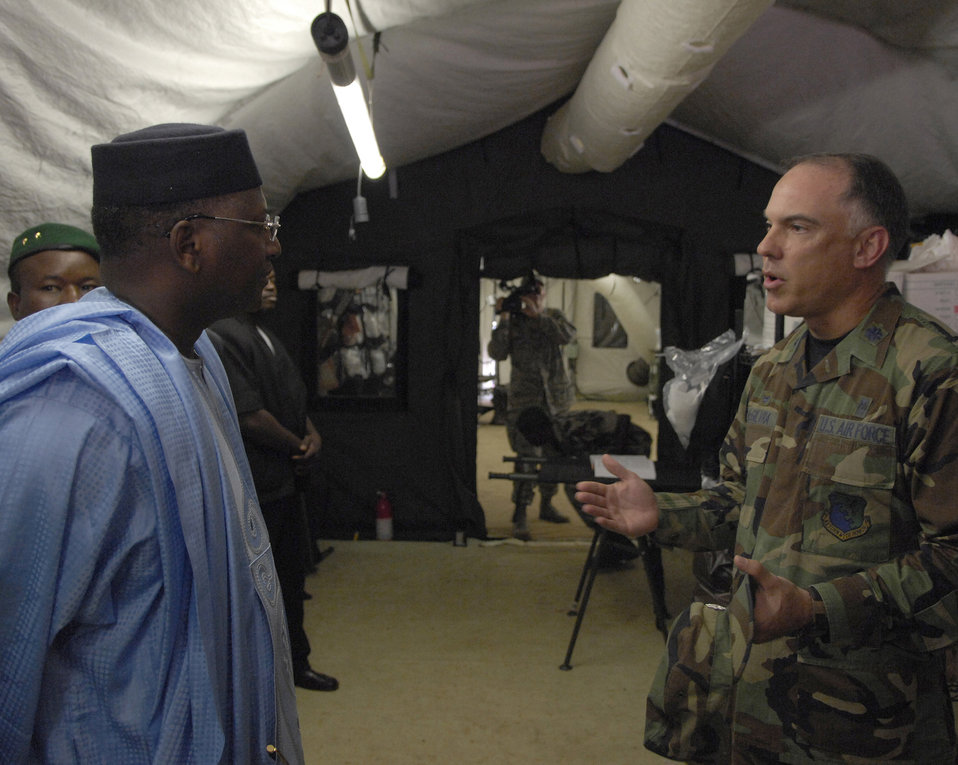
American and African medical personnel train together

Lt. Col. Troy McGilvra gives Malian Prime Minister Modibo Sidibe a tour of the expeditionary medical support facility July 18 during a mass casualty exercise at Kati village. More than 90 servicemembers deployed to Bamako, Mali, for MEDFLAG 08, a multi-national medical training exercise designed to enhance medical capabilities and readiness for U.S. and African Forces. Colonel McGilvra is the commander of MEDFLAG 08 and is deployed from the 31st Medical Group, Aviano Air Base, Italy.